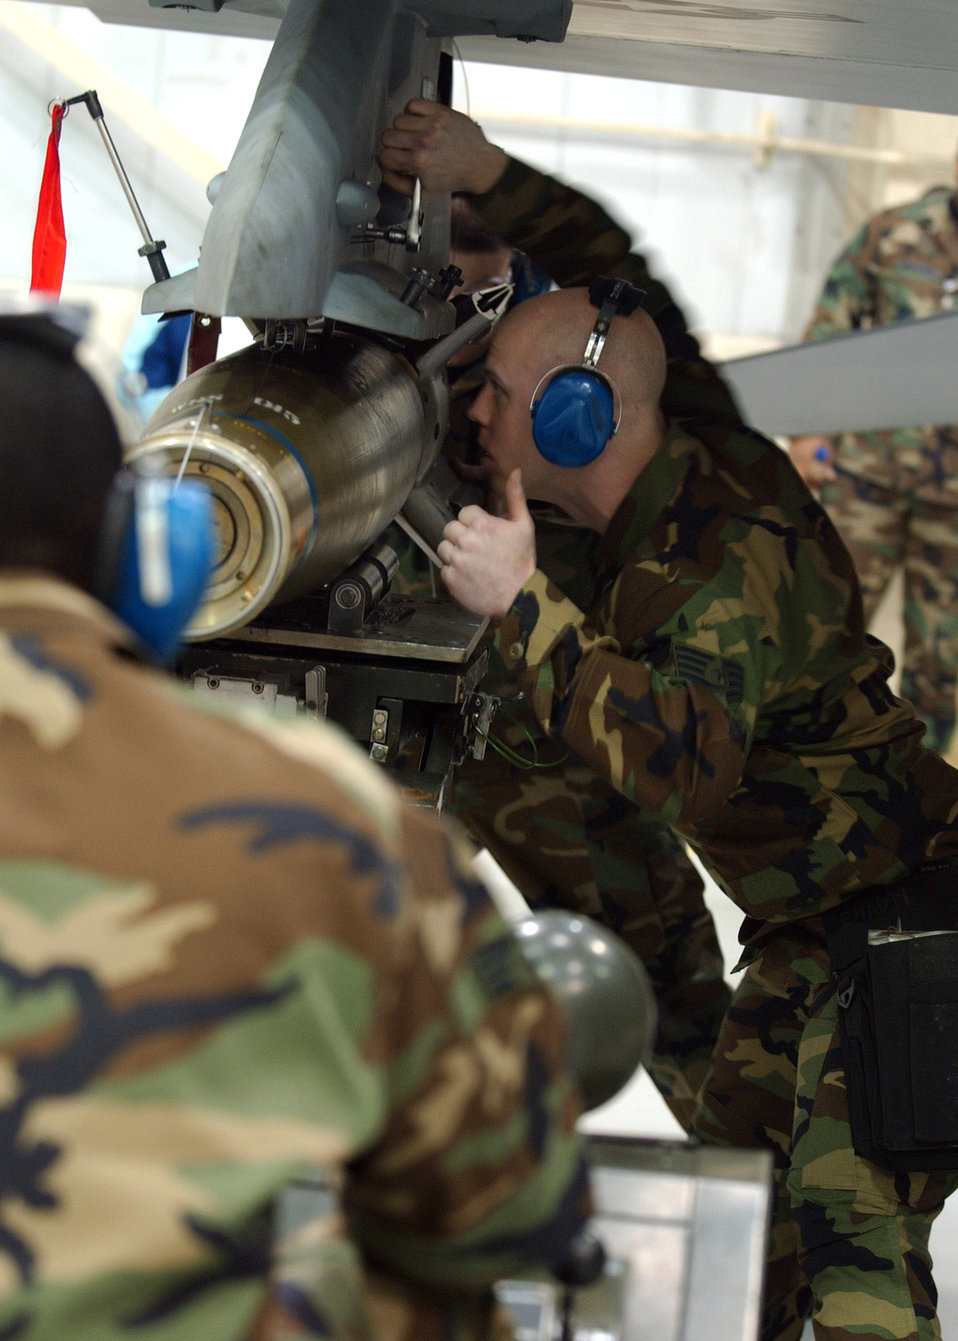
Competing for load crew honors

Staff Sgt. Aaron Slay motions to Senior Airman Corneilius Cutler to raise an air-to-ground missile to be loaded onto an F-16 Fighting Falcon for the Weapons Standardization Load Crew of the Year Competition Jan. 11 at Eielson Air Force Base, Alaska. The competition evaluates technical proficiency, safety procedures and overall time. Sergeant Slay and Airman Cutler are assigned to the 18th Aircraft Maintenance Unit. The 18th AMU's overall time was 56 minutes and 37 seconds.